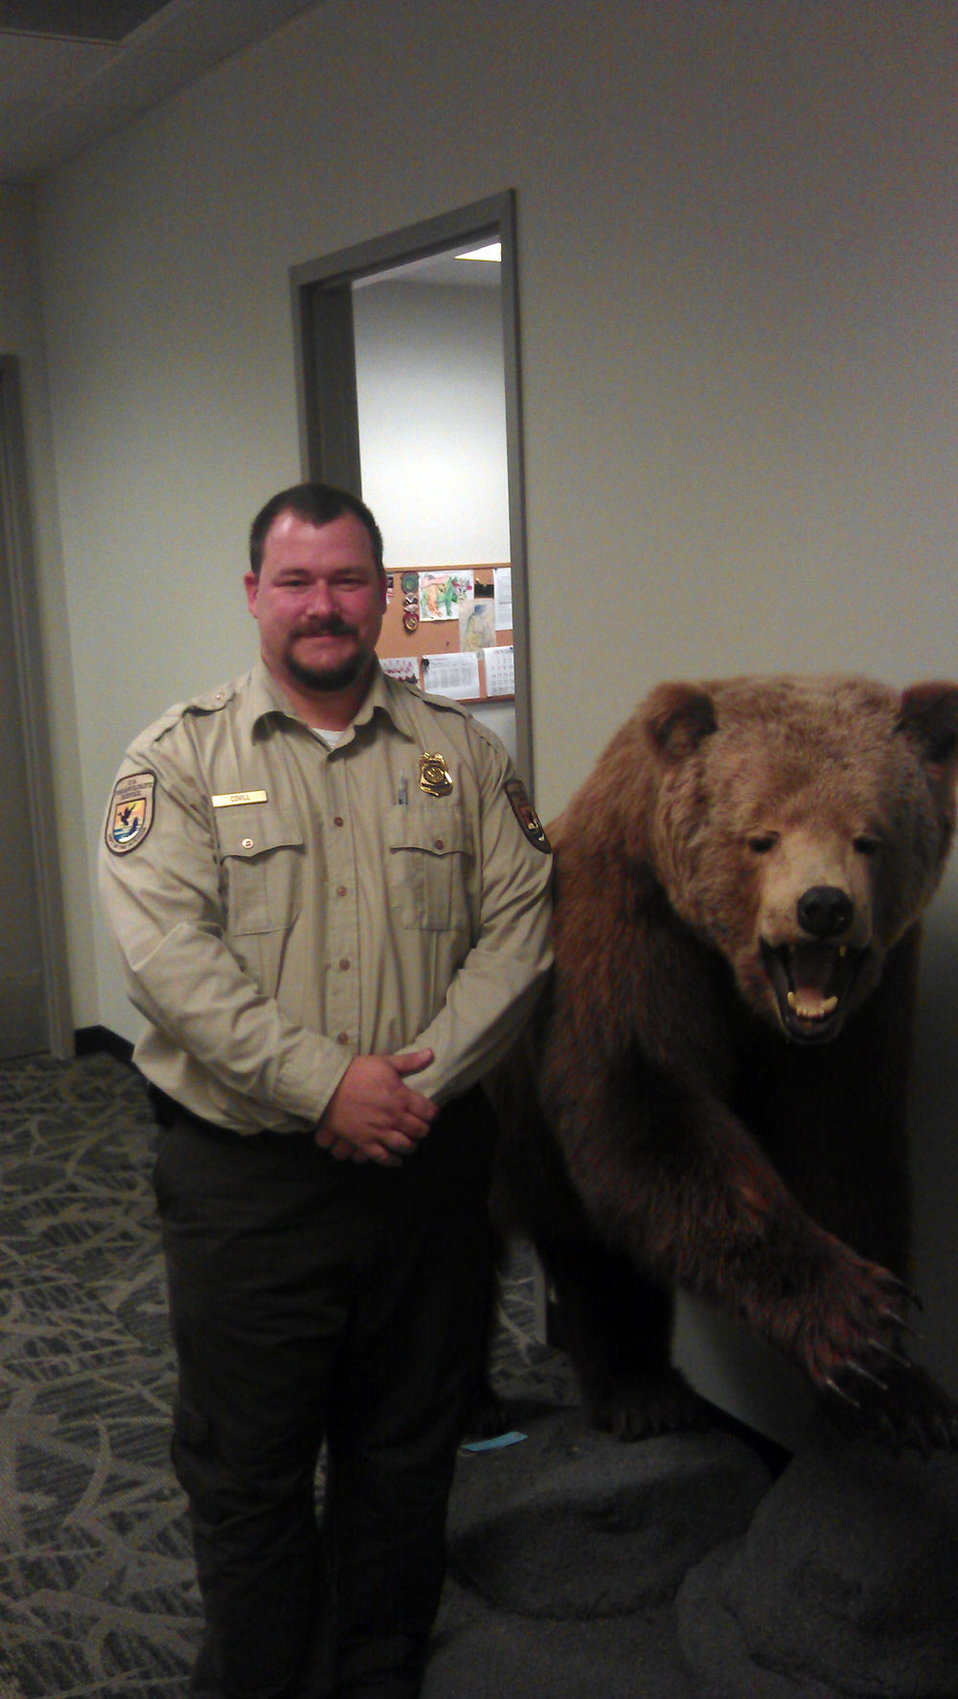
Kyle Covill-Northeast Region

Kyle Covill spent four years in the U.S. Marine Corps in aircraft rescue and as a firefighter. He was stationed in Beaufort, S.C., and was deployed in 1999 to both Norway and Haiti as part of “Operation Uphold Democracy.” While overseas, Covill served on a team that supported firefighting operations at all American camps and airfields. He currently works as a Wildlife Inspector for the Service’s law enforcement program in Port Elizabeth, N.J. Reflecting on his military and civilian service, Covill says, “I am honored to not only have served the people of my country, but I now serve the animals that are in need of saving around the world.”